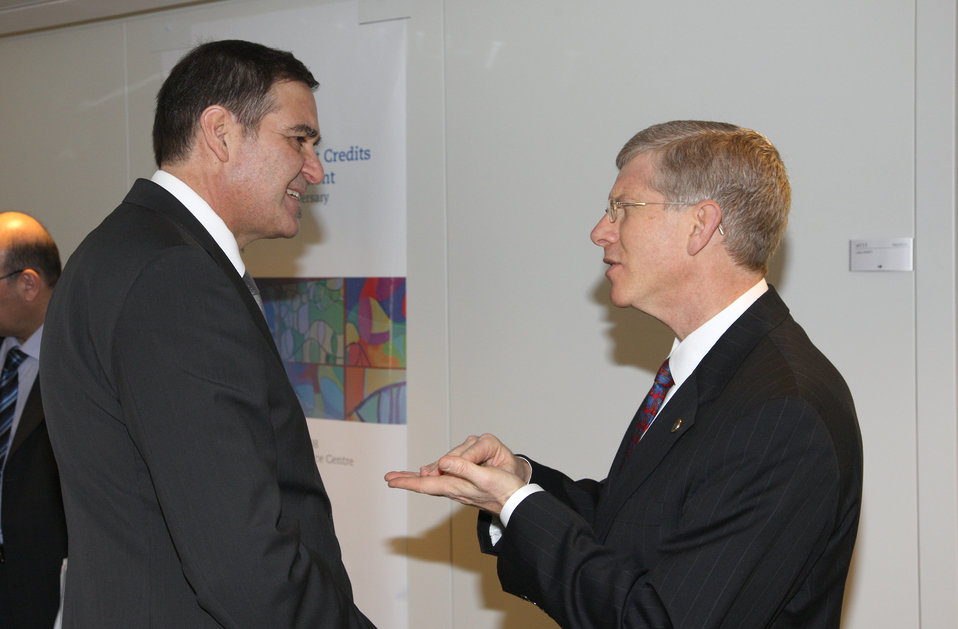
5C3K3724 copy